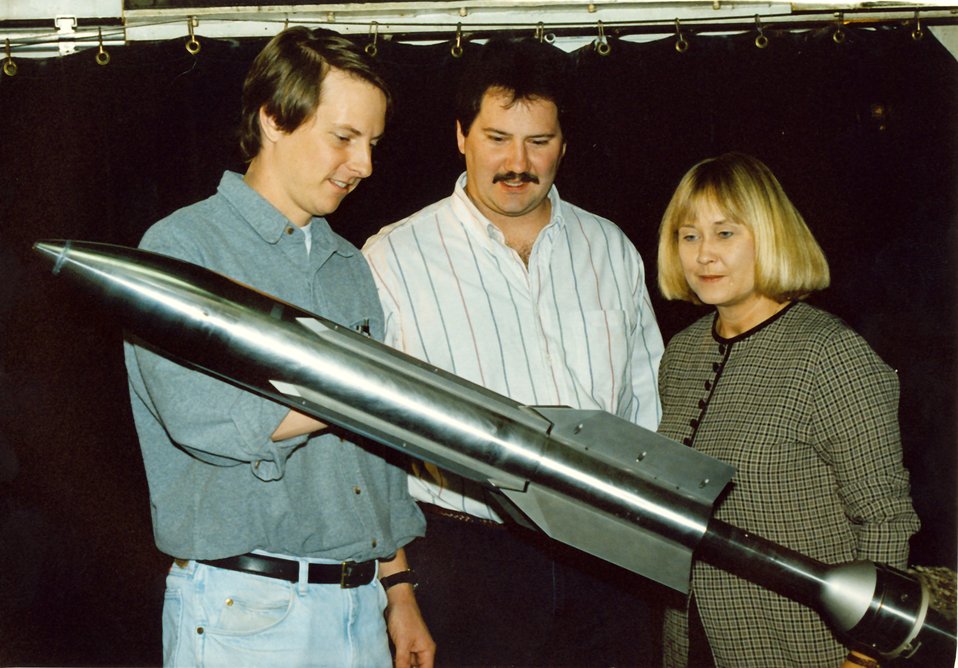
AEDC-tested Navy Standard Missile destroys errant satellite

Gregg Fox (from left), Andy Davenport and Sherry Simons inspect the 1/3 scale model of the third stage Navy Standard Missile in Arnold Engineering Development Center's von Karman Gas Dynamics Facility Wind Tunnel A in 1996 at Arnold Air Force Base, Tenn. They were gathering limited aerodynamic data for the customer's database. Mr. Fox is an Aerospace Testing Alliance tunnel installation engineer, Mr. Davenport is a former center lead engineer, and Ms. Simmons is an ATA project engineer.